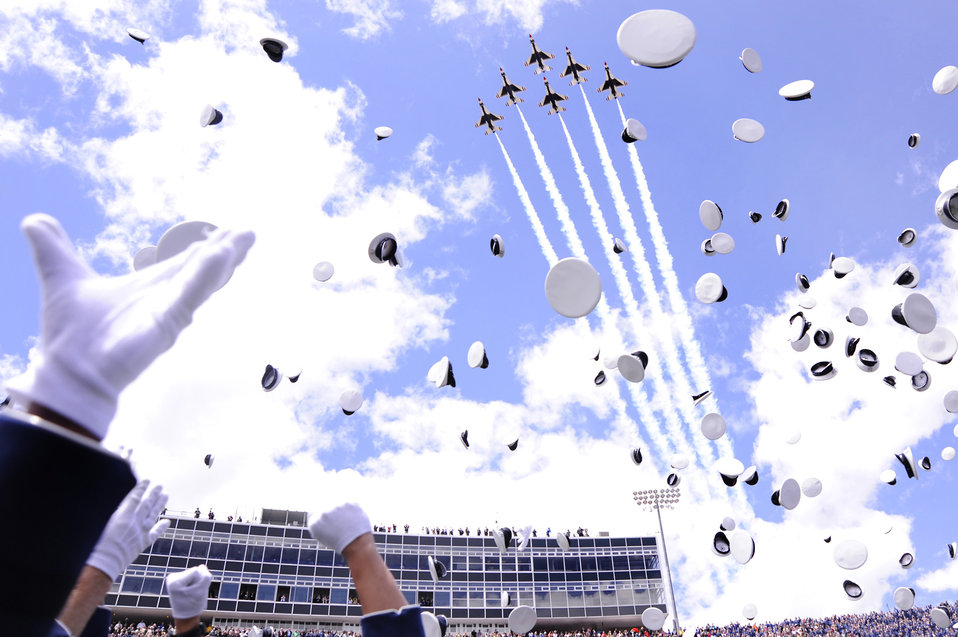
Aim high!

The Thunderbirds lead off the hat toss at the end of the Air Force Academy's Class of 2011 graduation ceremony May 25, 2011, in Colorado Springs, Colo.